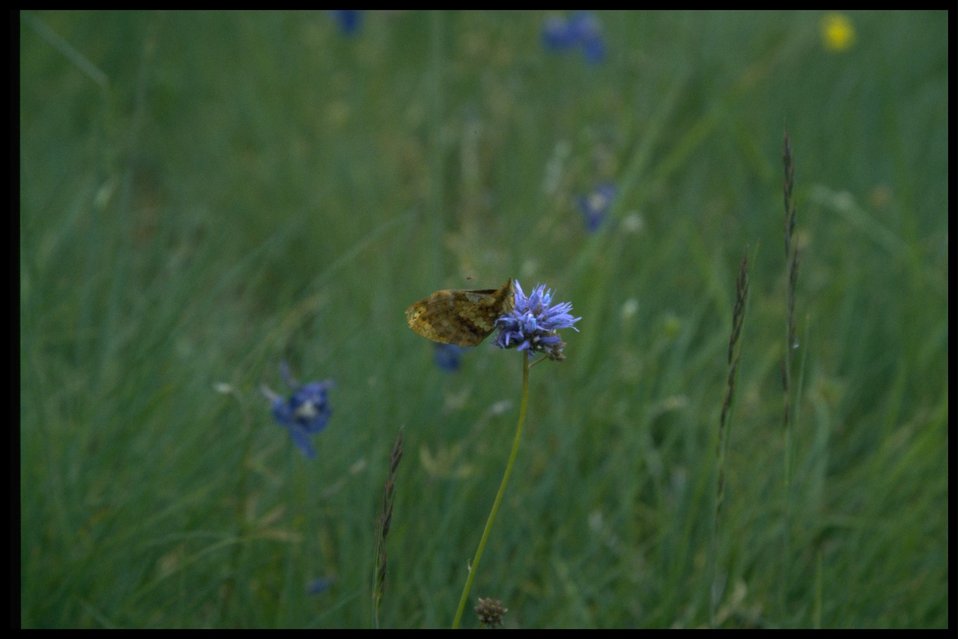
Farshot of Gilia (Ipomopsis) capitata.